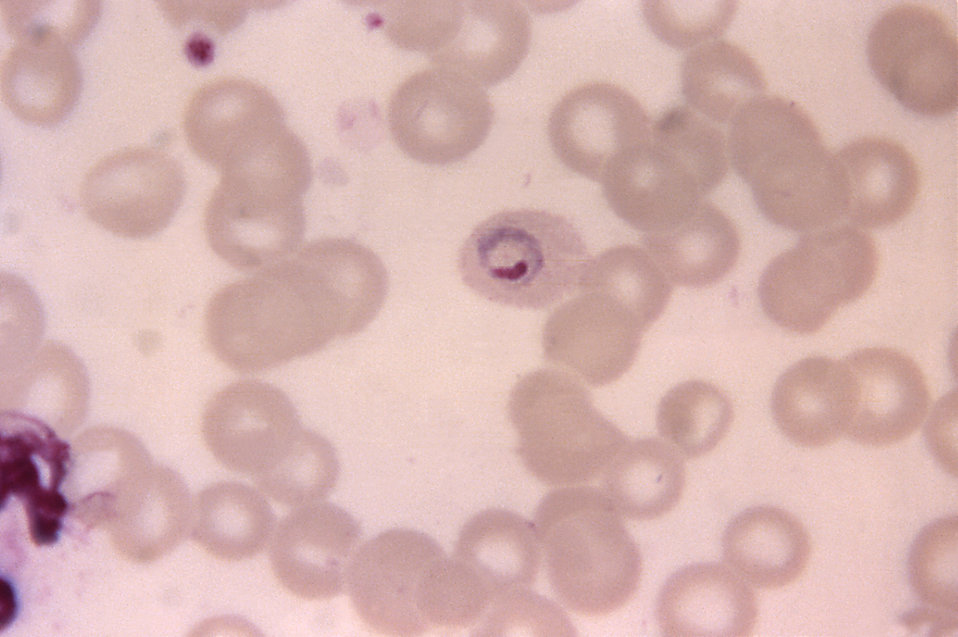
This thin film micrograph depicts a growing, ring-shaped Plasmodium ovale trophozoite within a slightly oval RBC.